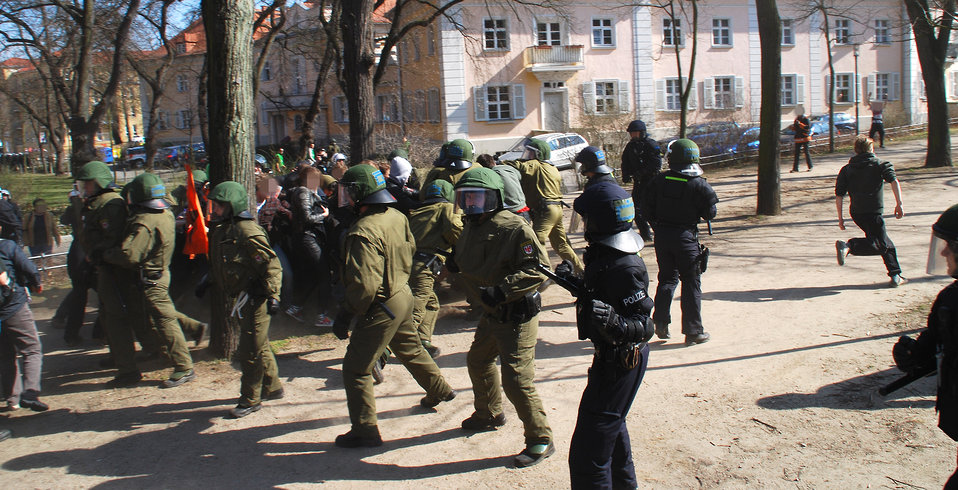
Proteste gegen den Nazi-Aufmarsch am 24.3.2012 in Frankfurt (Oder)